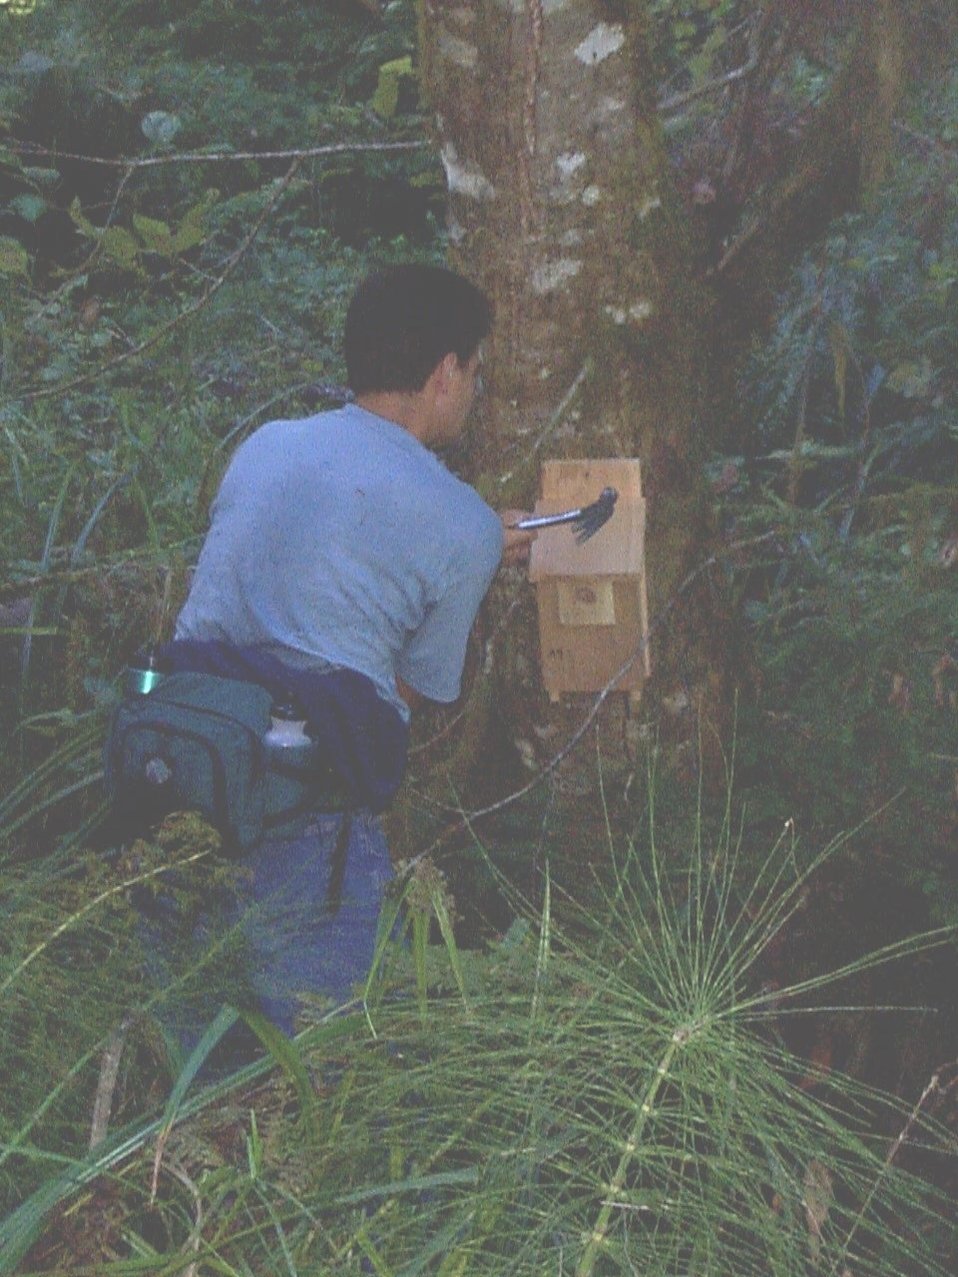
BLMer Raul Morales installs a bird box.